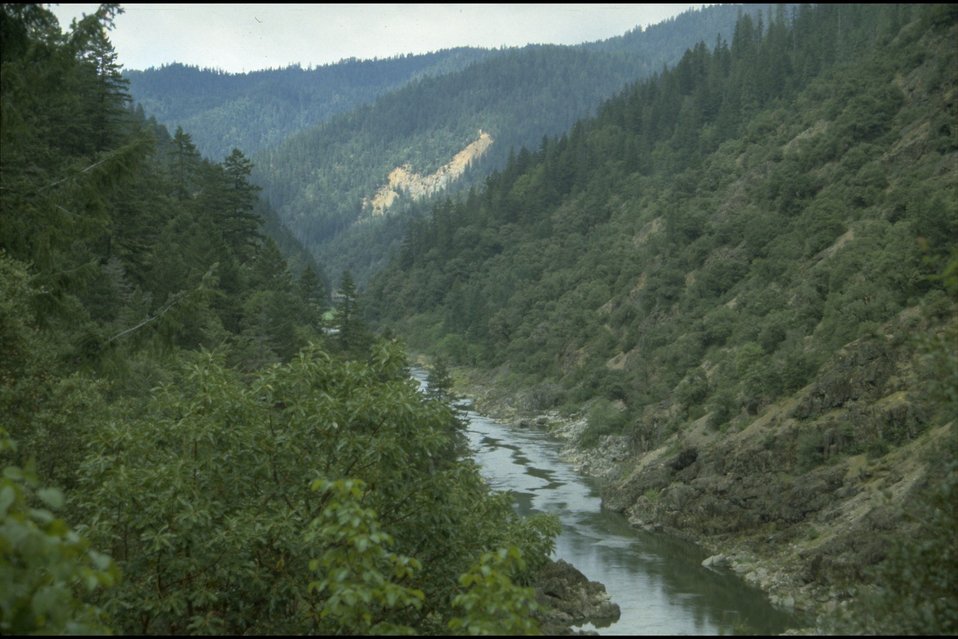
Rogue River - Wild Section; Big Slide in background. View from Rainie Falls Trail. Big Slide is just below Whisky Creek.